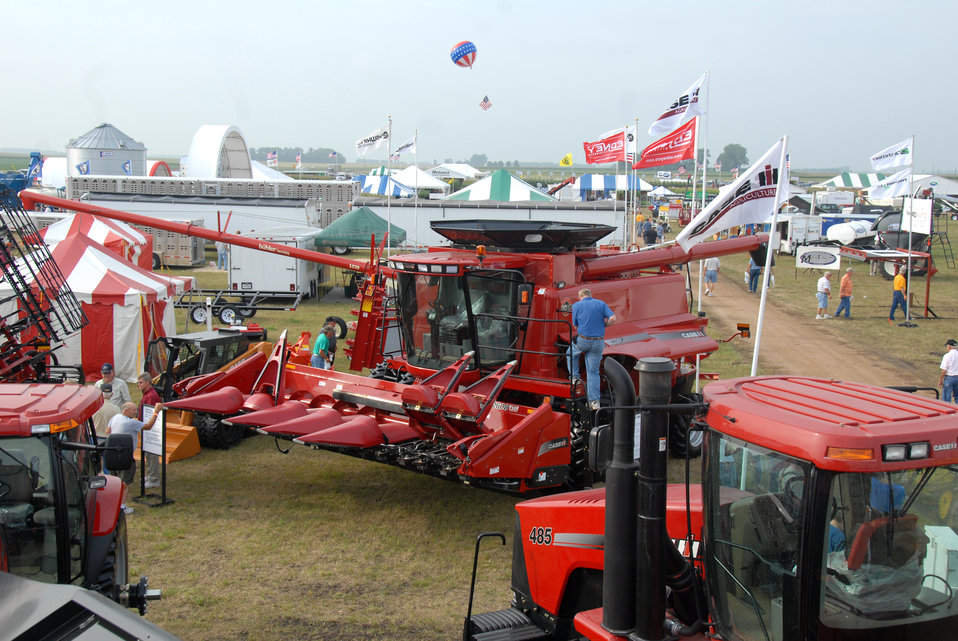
Tractors, loaders, tillage equipment and other types of agricultural farm machinery are displayed at the Minnesota Farmfest in Redwood County, Minnesota on August 7, 2007. Farmfest is one of the largest agricultural events in the world and it brings the best products and services to an audience that is drawn from every Minnesota County and has many visitors from five neighboring states.